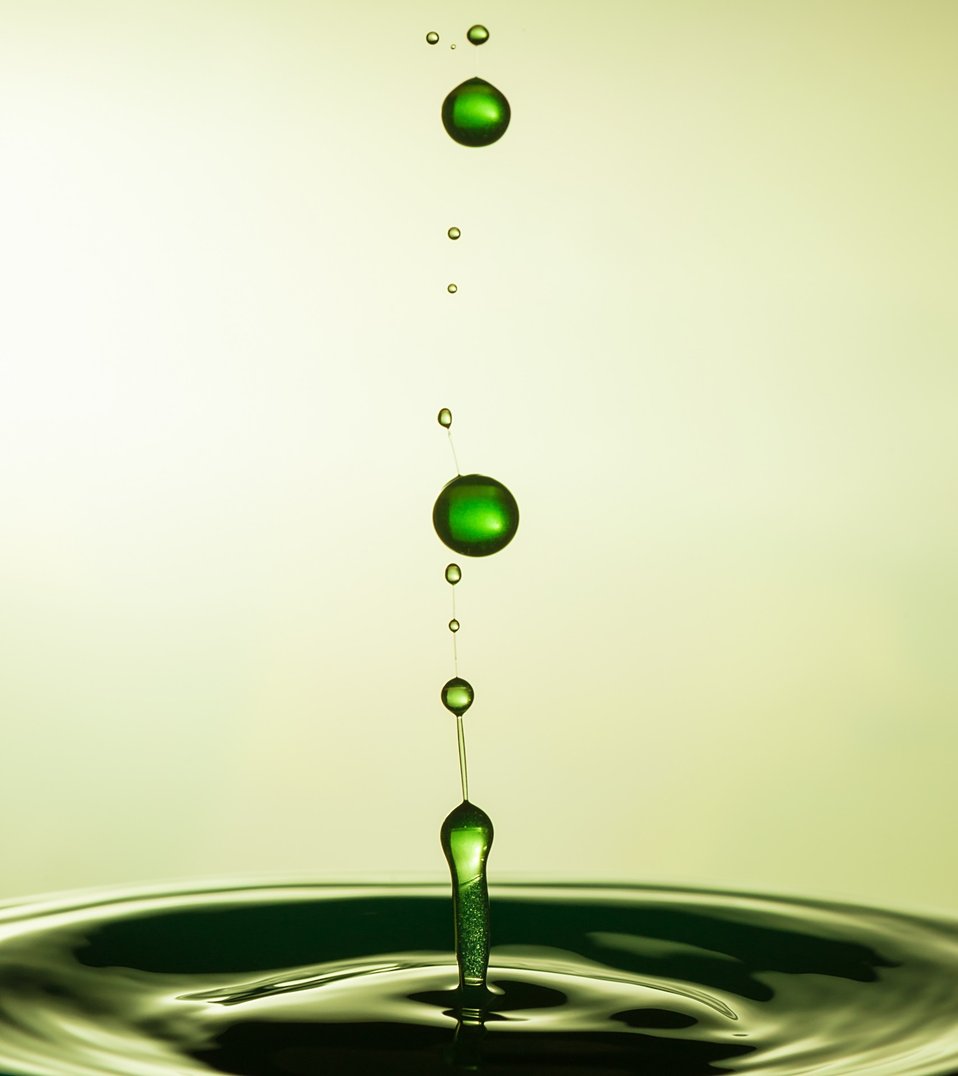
The green chain

Experiments with water and flash.